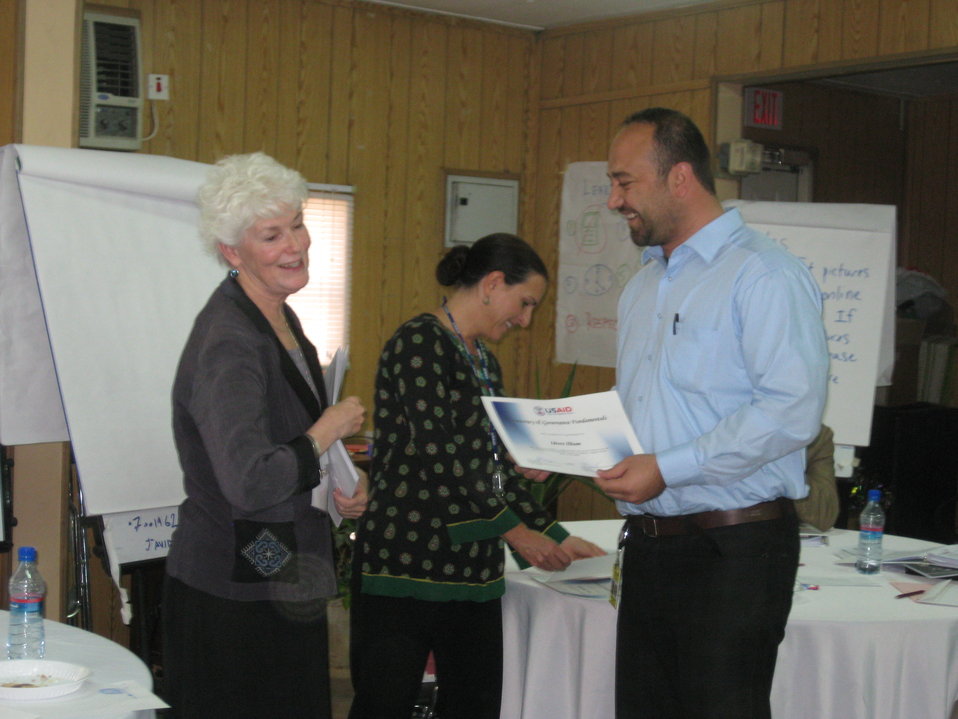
Afghan Youth Voices 067